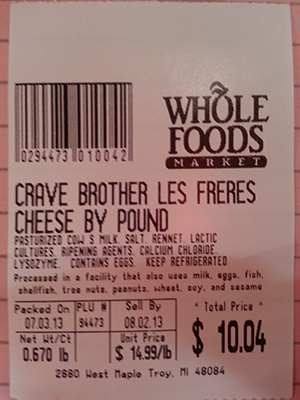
RECALLED – Cheese

July 5, 2013 – Product Recall – Whole Foods Market recalls cheese because of possible health risk.